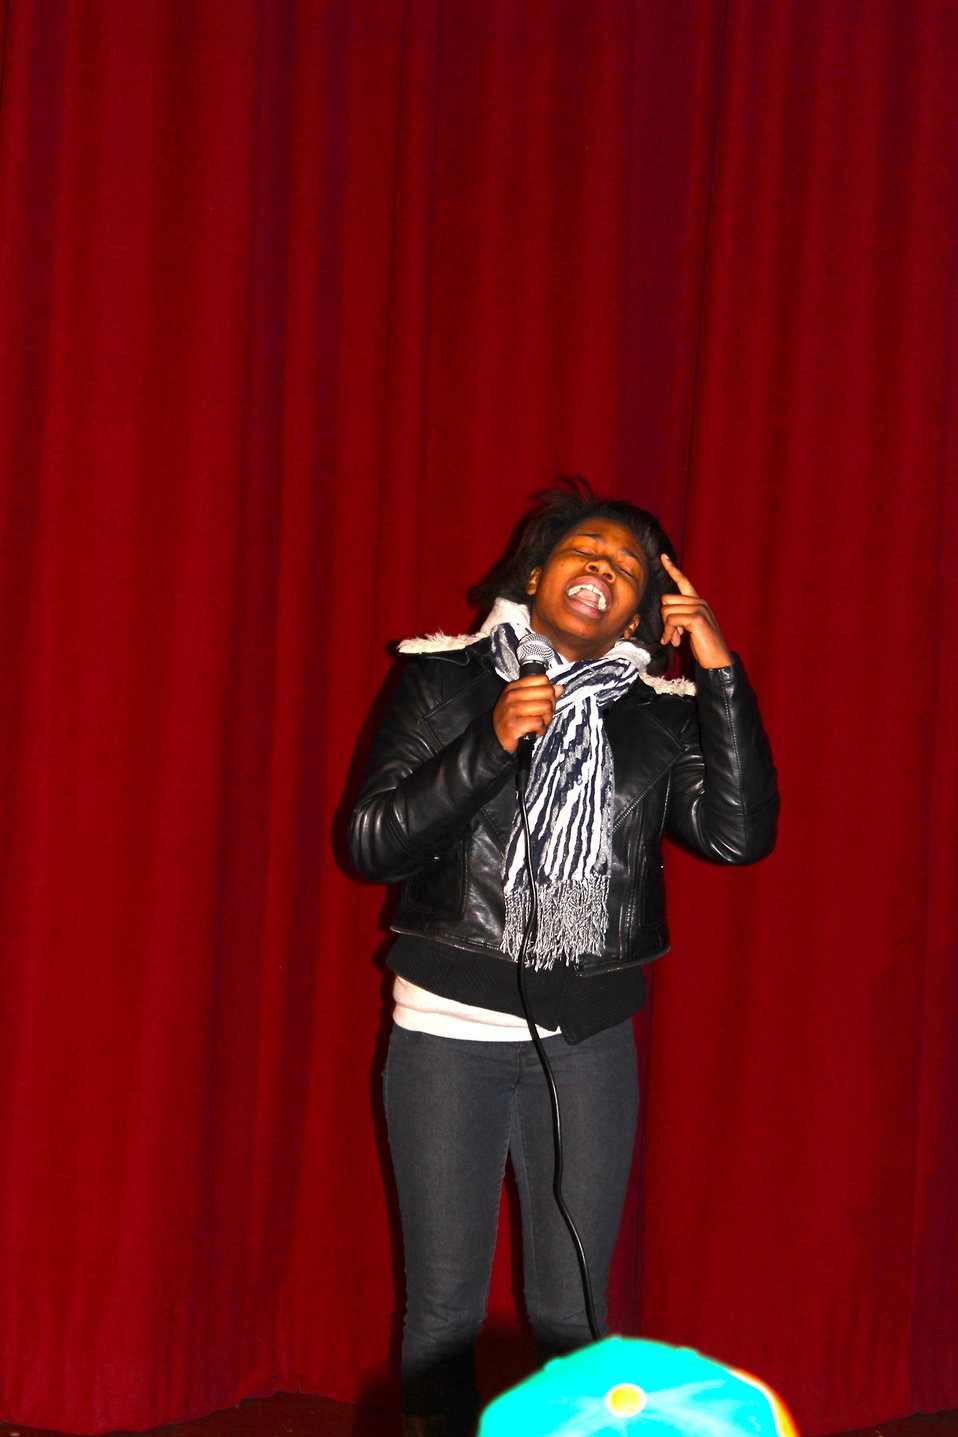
Youth Empowerment Program Poetry Slam held at Alternatives on Jan. 30 which was held to observe National Drug Facts Week and support youth in making healthy lifestyle choices.